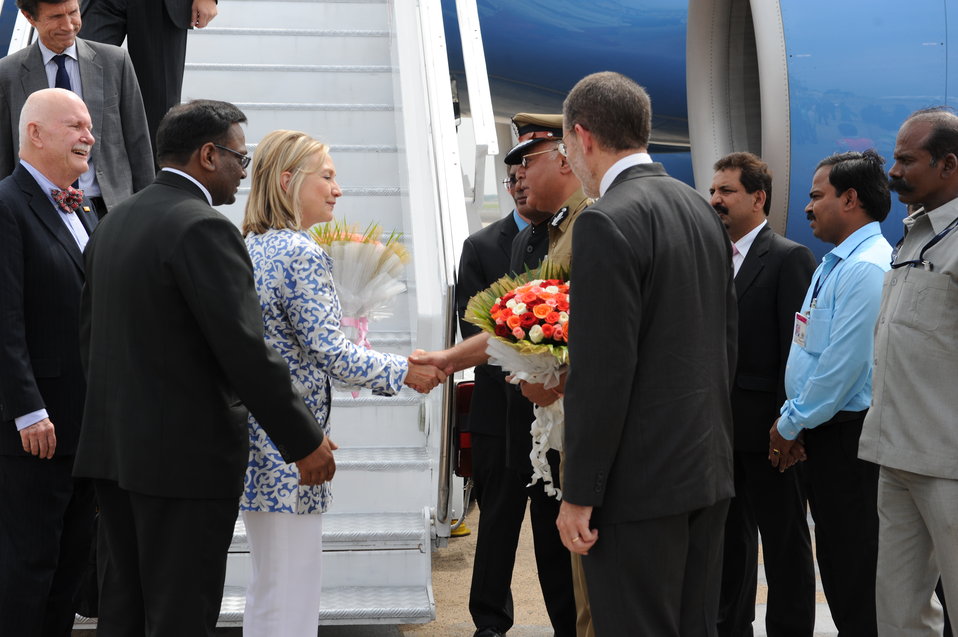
Secretary Clinton Shakes Hands With a Chennai Police Representative

U.S. Secretary of State Hillary Rodham Clinton shakes hands with a representative from the Chennai Police at Chennai Airport in Chennai, India, on July 20, 2011. [Paul Cohn/ State Department photo]